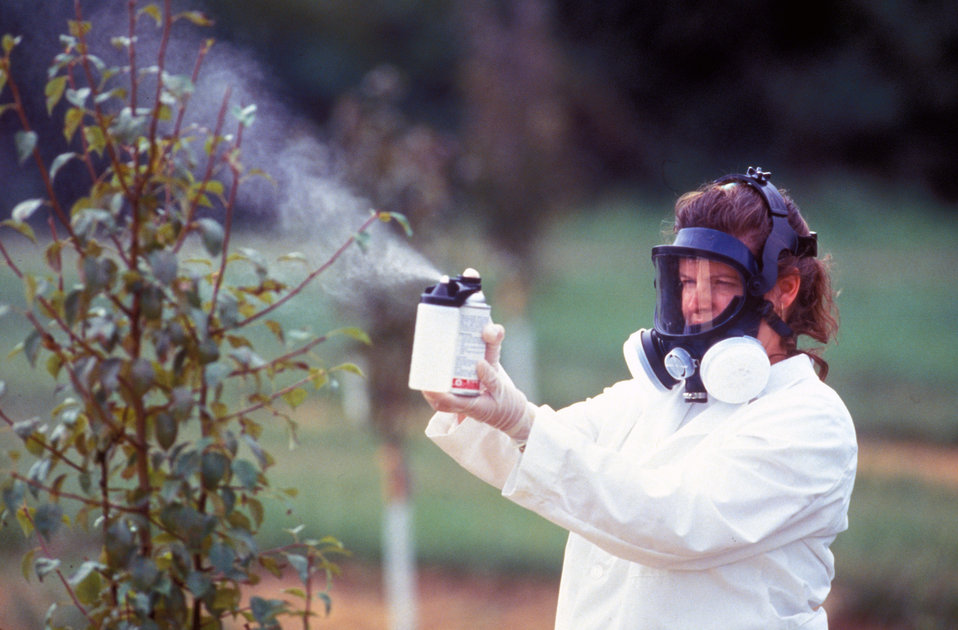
Trees infested with pear psylla get a shot of fungal pathogen spores from U.S. Department of Agriculture (USDA) Agricultural Research Service (ARS) biological technician Sharon Jones.